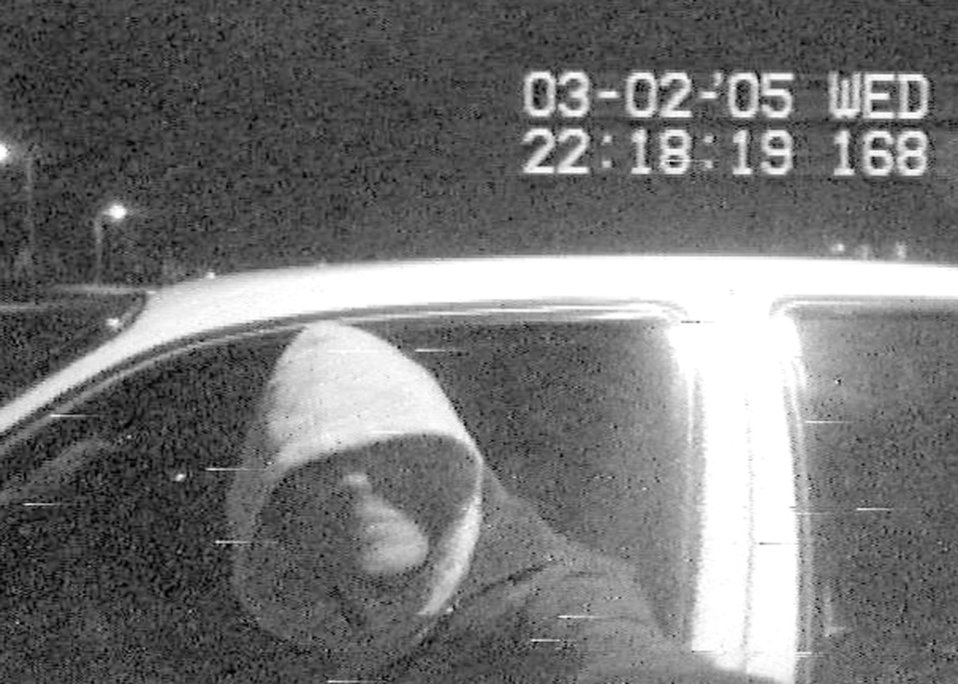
Cannon Airmen help police catch murder suspect

NEW MEXICO -- In the image frozen from a grainy video tape, a suspect in a double homicide case can be seen allegedly using the victim's credit card at an automated teller machine. Airmen from the 27th Communications Squadron at nearby Cannon Air Force Base, captured the photo from the video and enhanced it to help local law enforcement agencies capture the suspect.